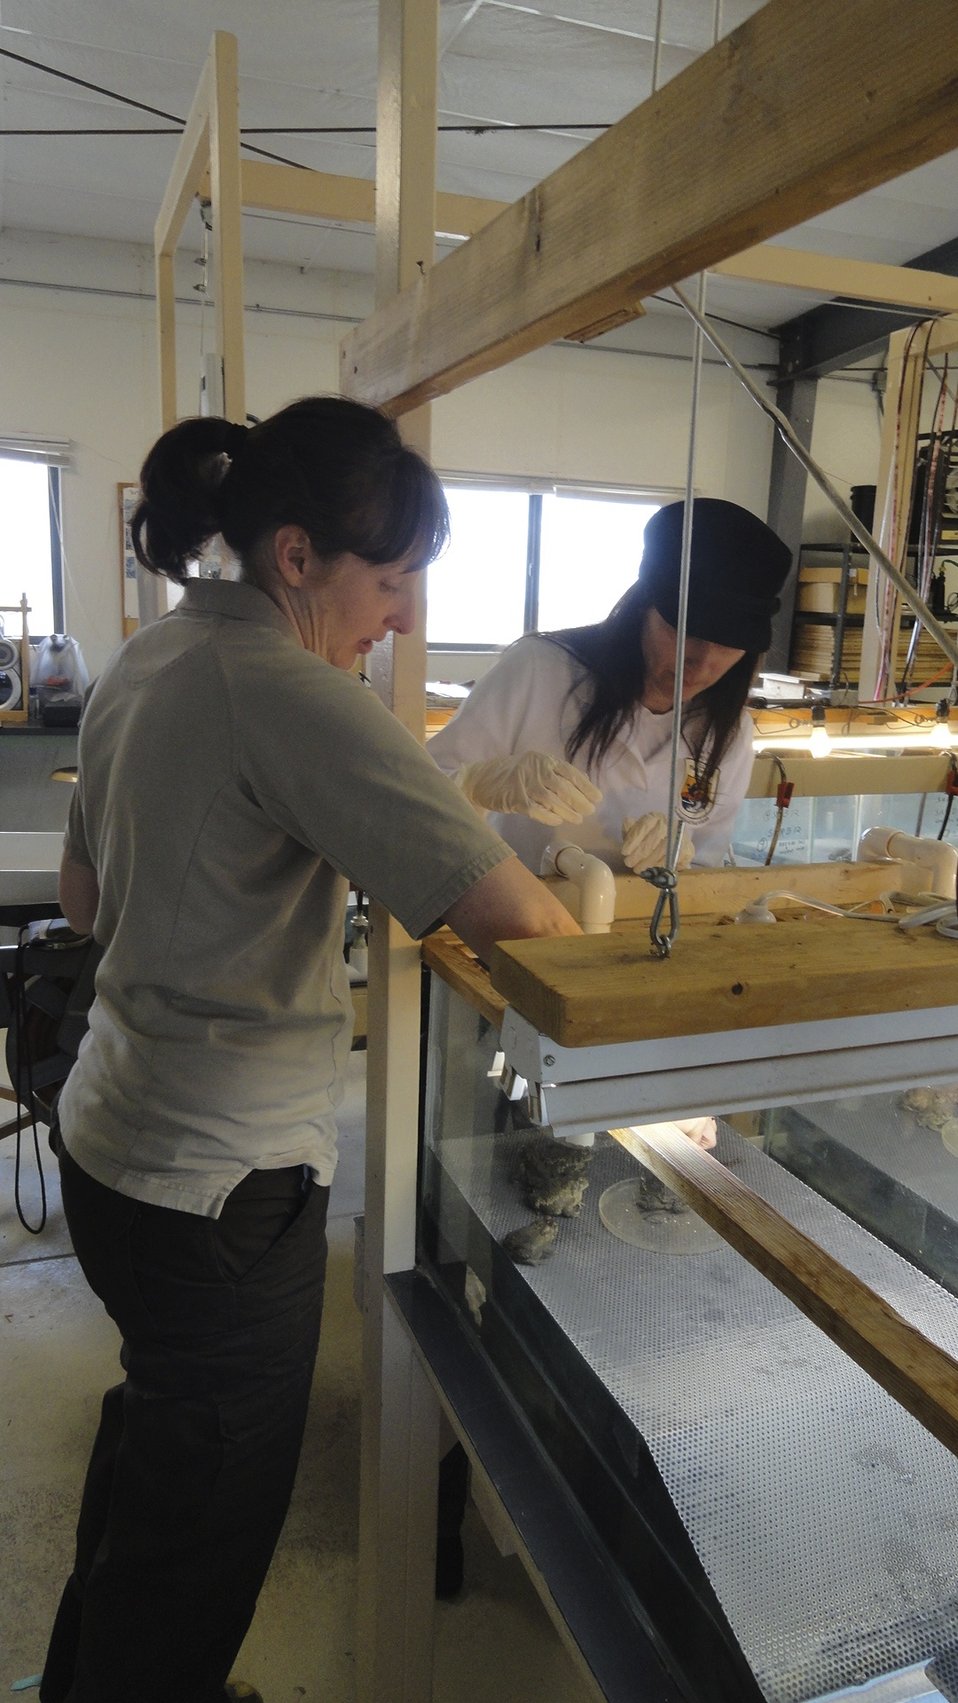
Visiting Saratoga National Fish Hatchery

In April of 2014, regional office employees visited Saratoga National Fish Hatchery to learn more about its efforts towards recovering the Wyoming toad (Bufo baxteri).

The hatchery adopted a unique role in becoming the first unit in the National Fish Hatchery System to become involved in rearing endangered amphibians. The Wyoming toad was a common sight on areas of the Laramie Plains, Albany County, Wyoming, into the early 1970s but the species' populations crashed in the mid-1970s. The Wyoming toad was listed as endangered by the U.S. Fish & Wildlife Service in January 1984. Found only in southwestern Wyoming, the Wyoming toad is considered the most endangered amphibian in North America. The hatchery maintains a captive population for breeding, rearing, and refugia, and the offspring from this program will be used for reintroduction efforts.